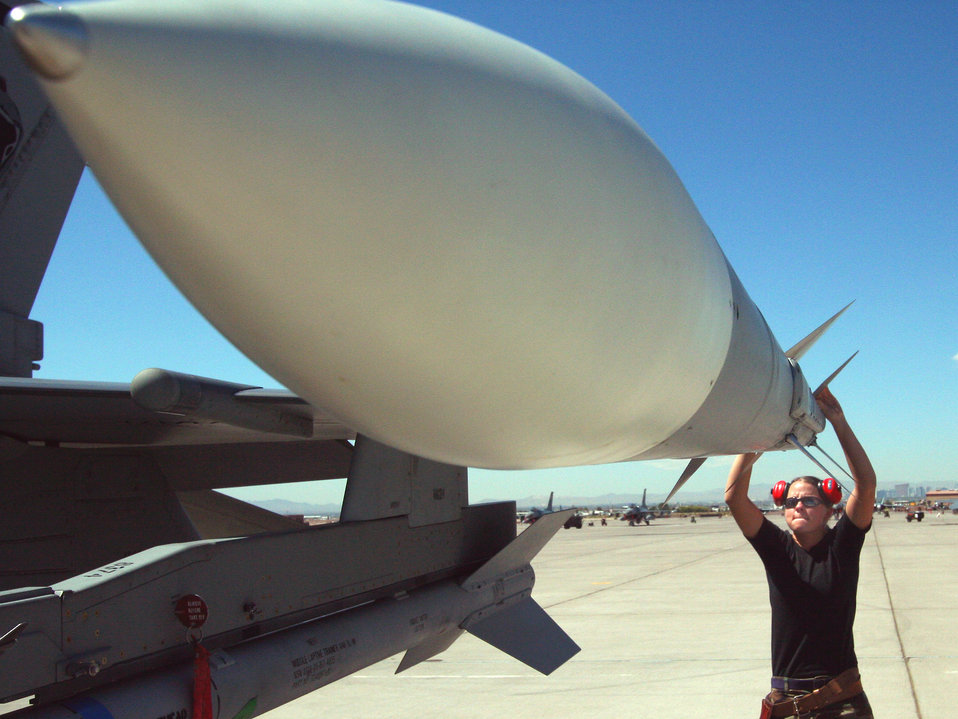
Getting ready for Red Flag

Staff Sgt. Jessica Srigley inspects an AIM-120 missile on an F-16 Fighting Falcon that is being readied for a mission at Red Flag 06-02 at Nellis Air Force Base, Nev., on Aug. 8. Sergeant Srigley is a maintainer with the Iowa Air National Guard's 132nd Fighter Wing in Des Moines.